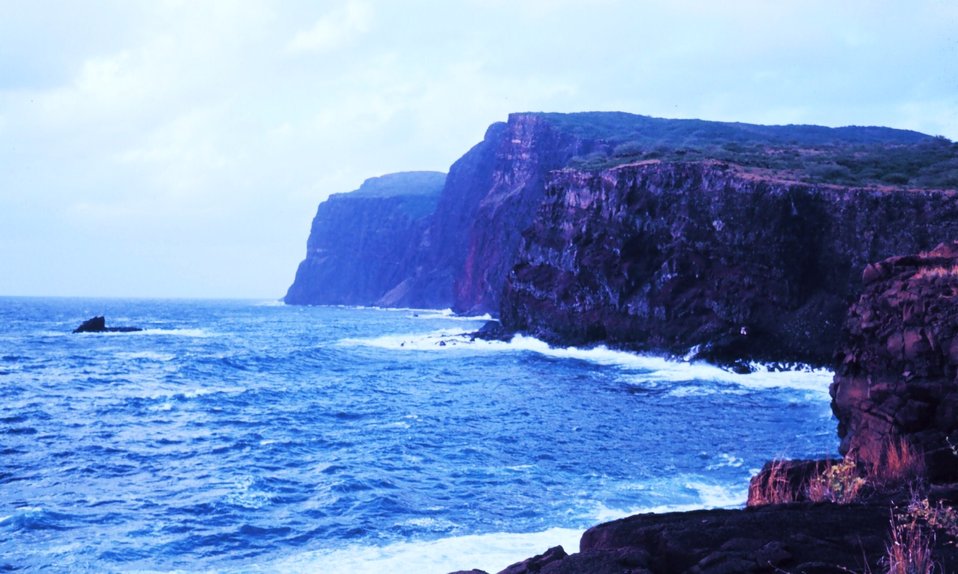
Lanai Cliffs